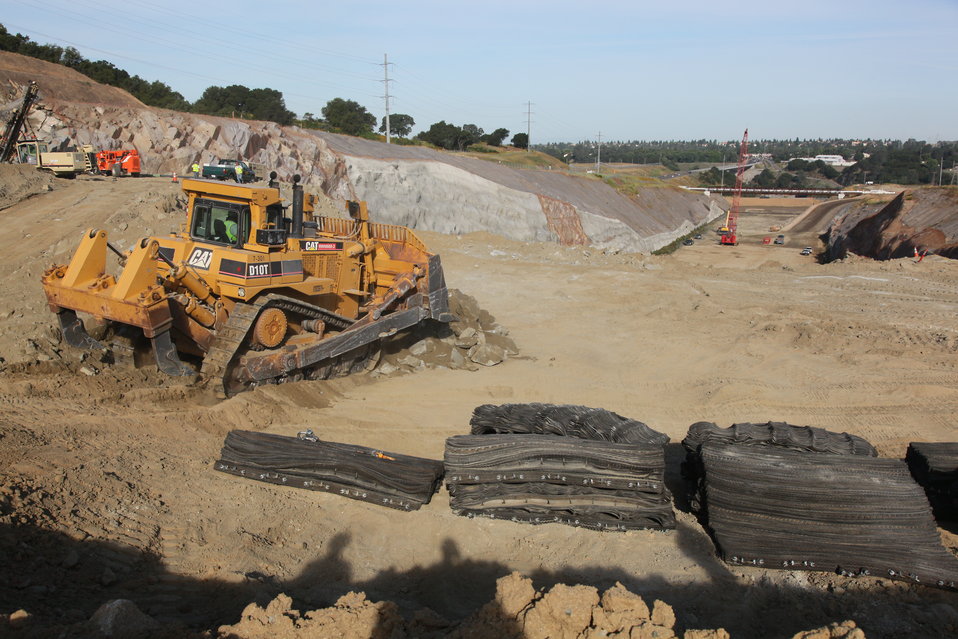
Excavating Folsom Dam’s auxiliary spillway

Excavation of the auxiliary spillway at Folsom Dam in Folsom, Calif., continues June 16, 2011. The spillway will let Folsom Dam release water sooner and more safely. The project is part of the Folsom Dam Joint Federal Project, a joint effort of the U.S. Army Corps of Engineers Sacramento District, the U.S. Bureau of Reclamation, the Central Valley Flood Protection Board and the Sacramento Area Flood Control Agency to improve the safety of the dam and reduce flood risk for the greater Sacramento area.